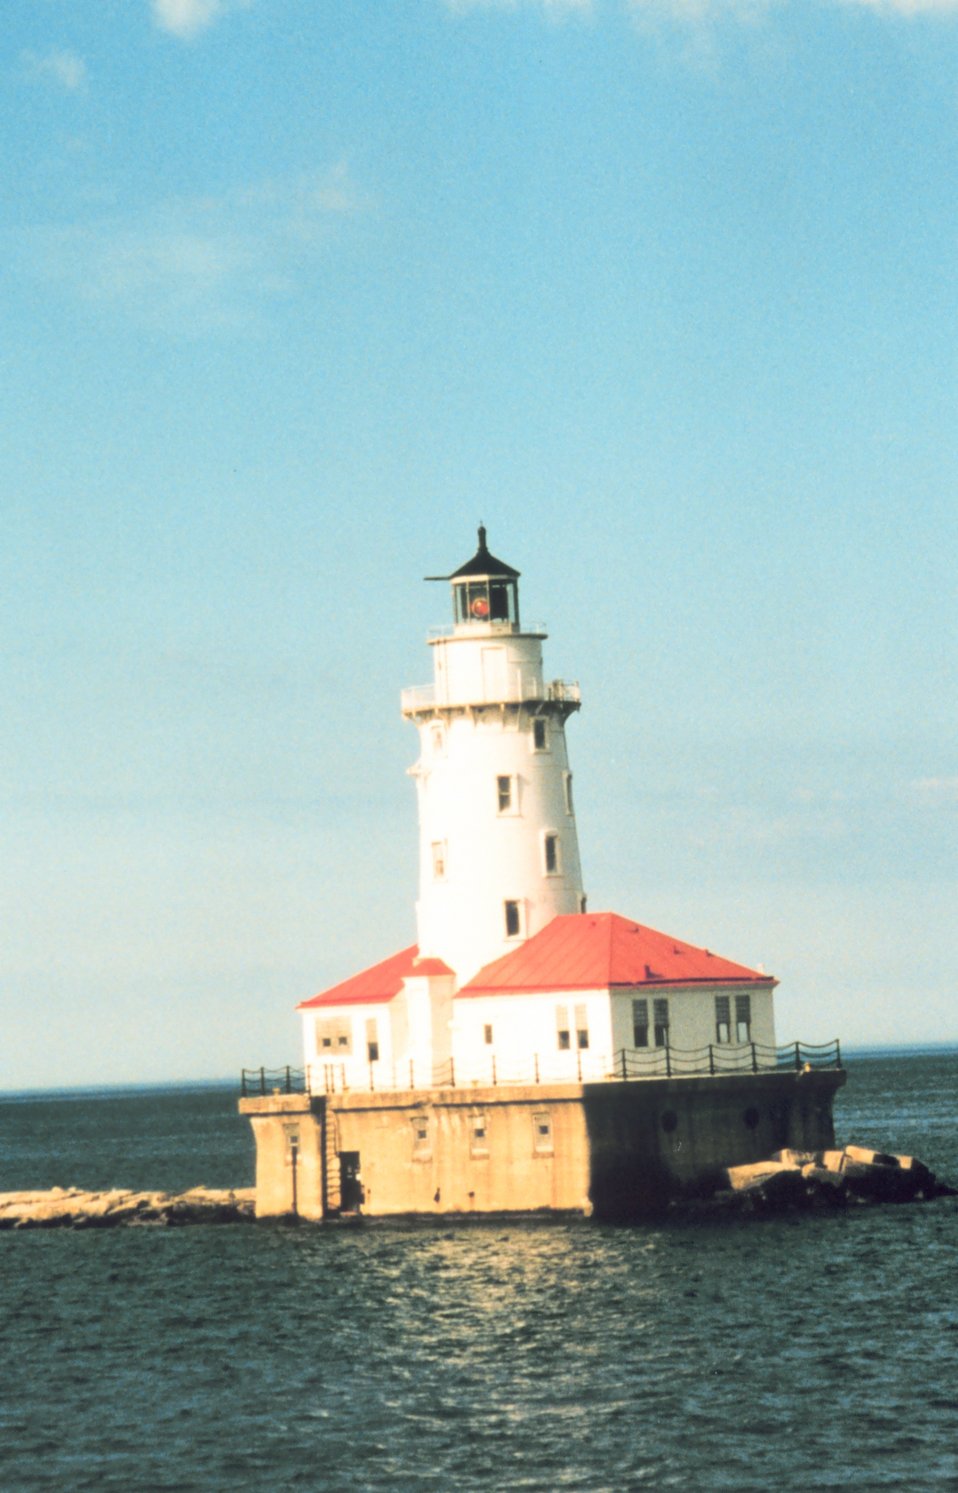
Chicago Harbor Light